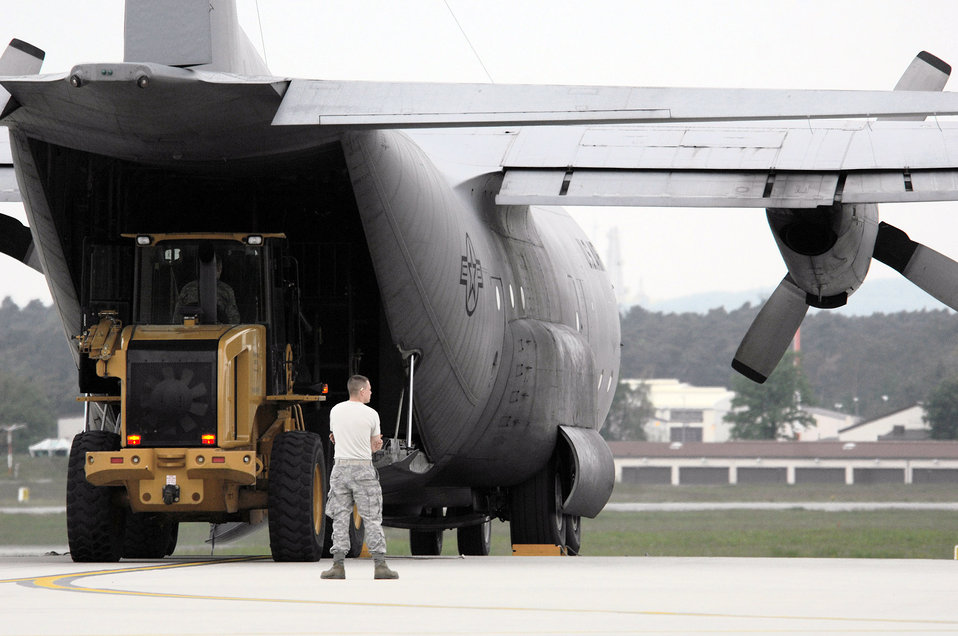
Loading up to support NASA

1st Combat Communication Squadron Airmen prepare to loadlife saving equipment onto a C-130 Hercules May 9 at Ramstein Air Base, Germany. The Airmen supported NASA's launch of Space Shuttle Atlantis May 11.